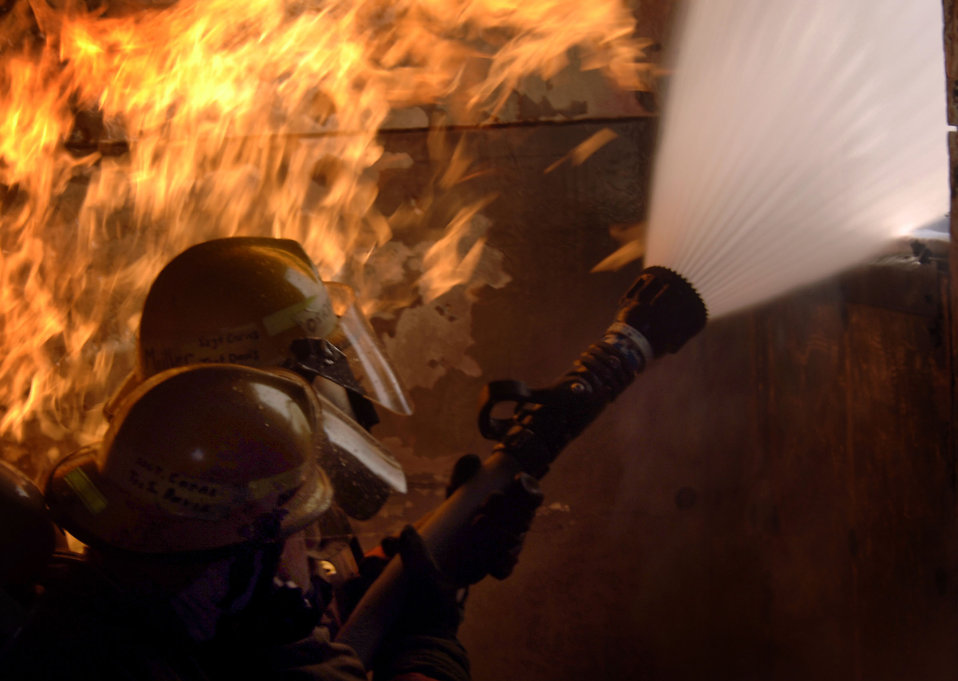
Fire protection training

GOODFELLOW AIR FORCE BASE, Texas (AFPN) -- Joint fire protection training students use a hose to spray water out a structures window. This draws smoke out so another team can fight the fire. They are in the sixth and final block of their fire training here.